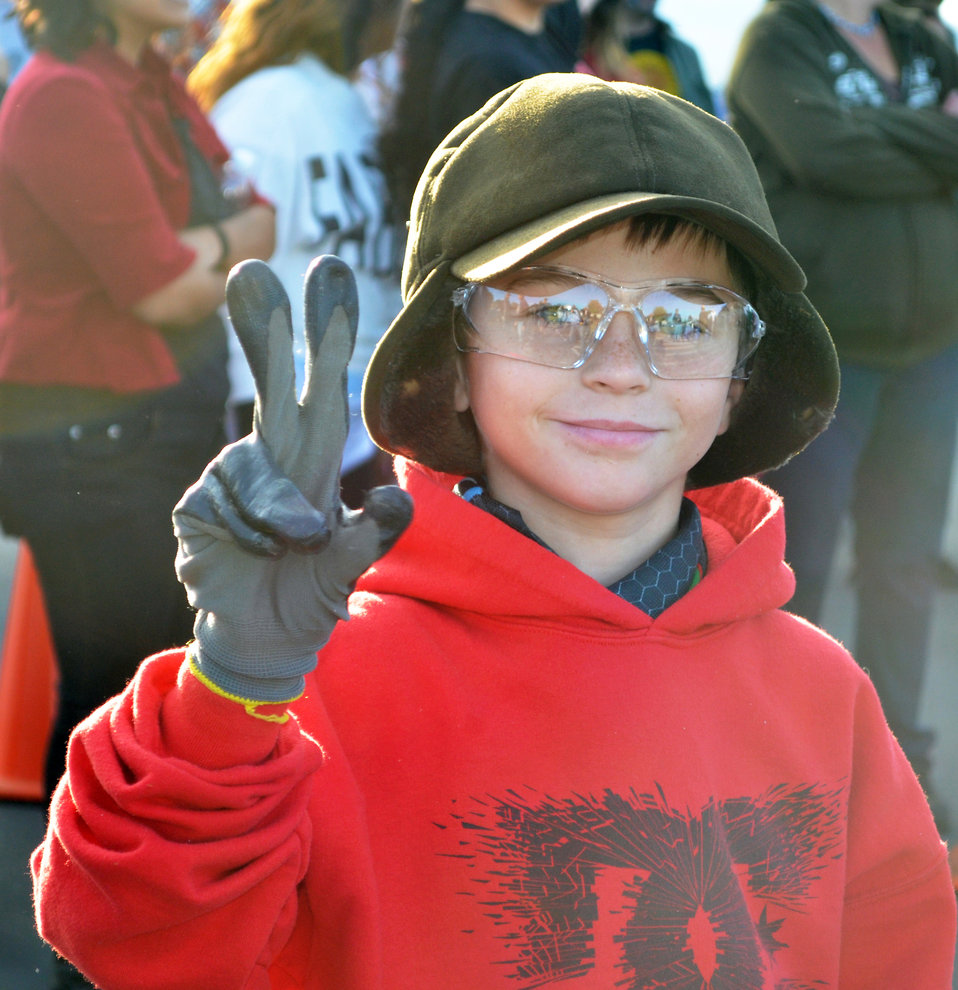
NPLD 2013 USACE Sacramento District

Fully prepared in safety goggles and gloves, a young volunteer beams with enthusiasm during National Public Lands Day, Sept. 28, 2013, at New Hogan Lake, the U.S. Army Corps of Engineers Sacramento District park near Valley Springs, Calif.